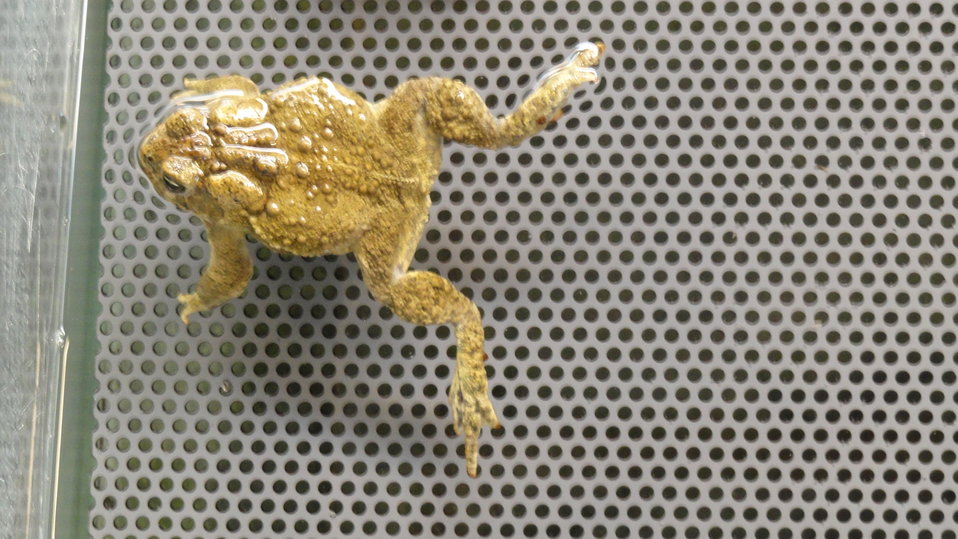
Visiting Saratoga National Fish Hatchery

In April of 2014, regional office employees visited Saratoga National Fish Hatchery to learn more about its efforts towards recovering the Wyoming toad (Bufo baxteri).

The hatchery adopted a unique role in becoming the first unit in the National Fish Hatchery System to become involved in rearing endangered amphibians. The Wyoming toad was a common sight on areas of the Laramie Plains, Albany County, Wyoming, into the early 1970s but the species' populations crashed in the mid-1970s. The Wyoming toad was listed as endangered by the U.S. Fish & Wildlife Service in January 1984. Found only in southwestern Wyoming, the Wyoming toad is considered the most endangered amphibian in North America. The hatchery maintains a captive population for breeding, rearing, and refugia, and the offspring from this program will be used for reintroduction efforts.